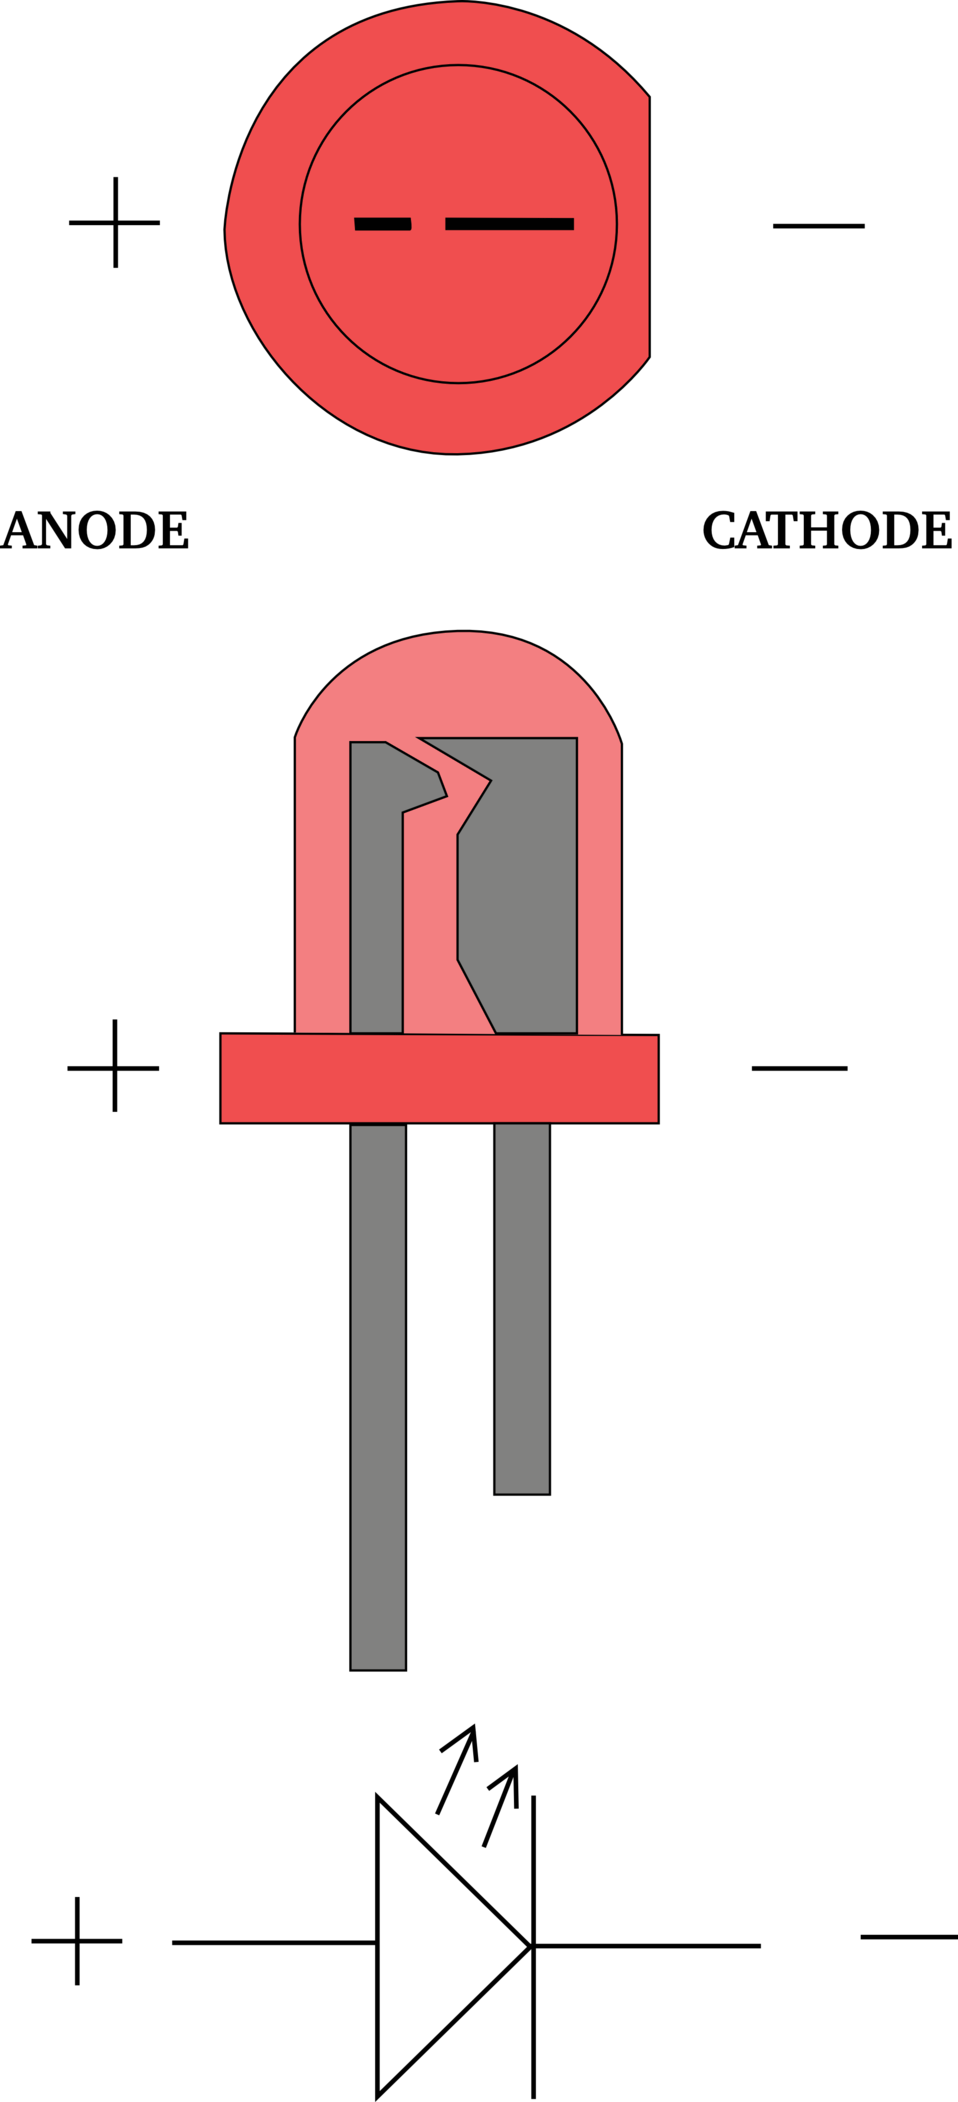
Anode and cathode of LEDs. LEDの極性。